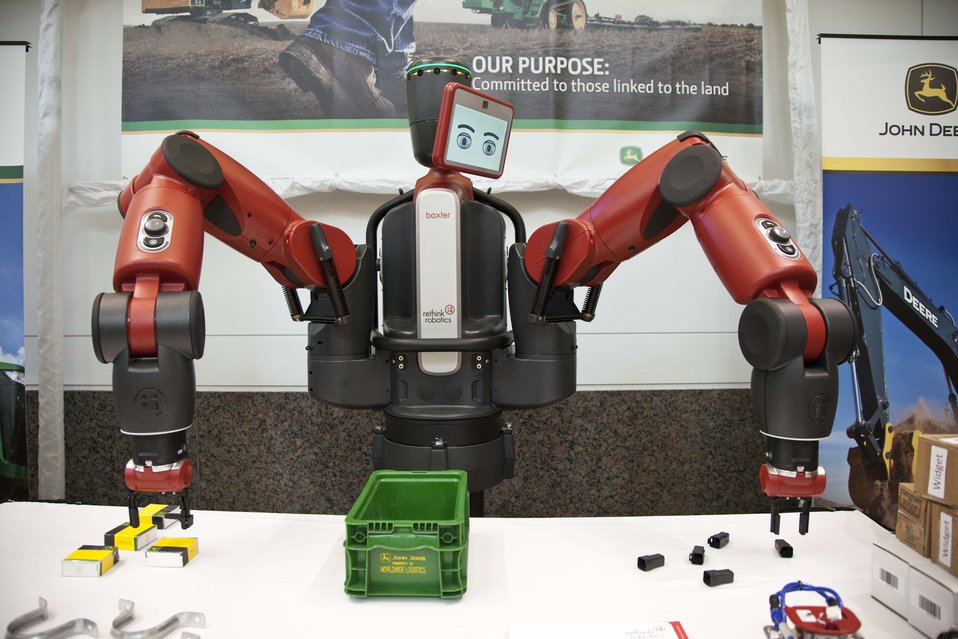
AEMC Summit

Meet Baxter, an interactive, teachable robot designed to be used in the next generation of manufacturing. Baxter can be used to complete simple tasks, like packing boxes, order fulfillment or testing and sorting.